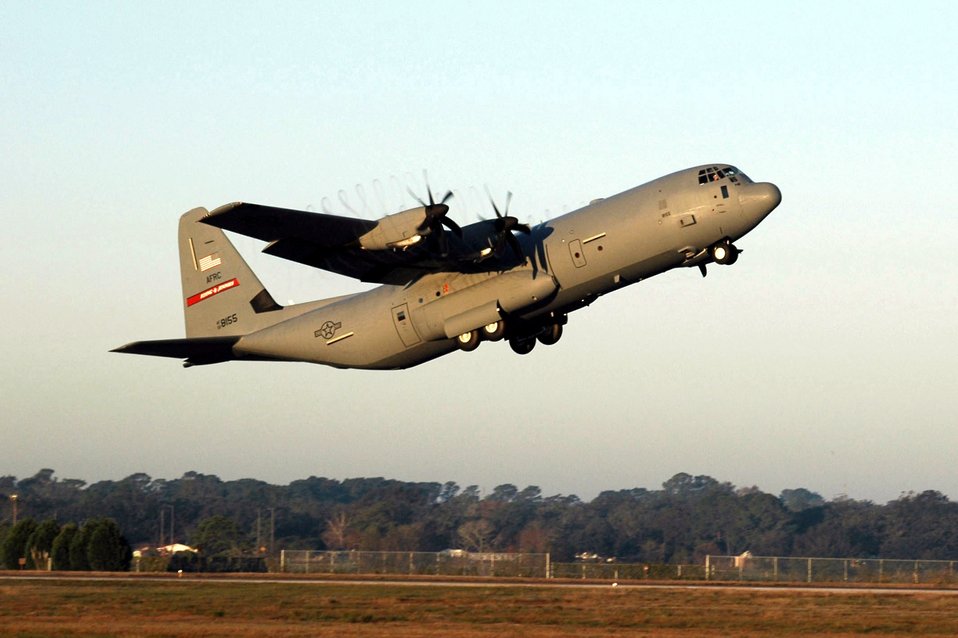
Hurricane Hunters track Pacific winter storms

A WC-130J Hercules, also known as a Hurricane Hunter, takes off with an aircrew from the 815th Airlift Squadron and support members from the 403rd Wing at Keesler Air Force Base, Miss. Airmen and two Hurricane Hunters from Keesler AFB are on a month-long mission to support the winter storm reconnaissance program in Anchorage, Alaska.